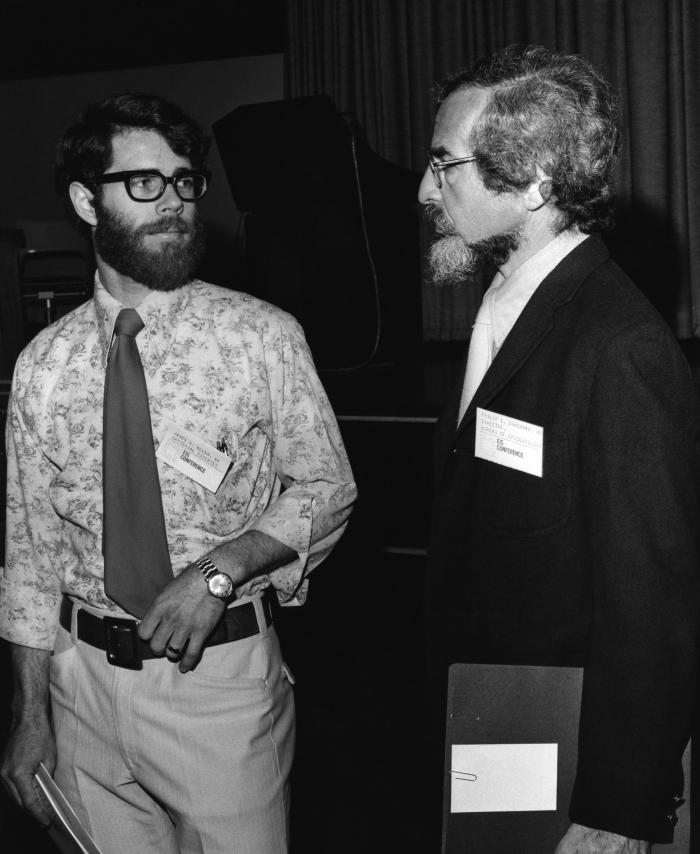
This 1970s photograph depicted at left, James R. Allen, M.D., M.P.H. and E.I.S. Class of '72, and Philip S. Brachman, M.D., and E.I.S. Class of '54, while the two were attending an annual Epidemic Intelligence Service (EIS) Conference.